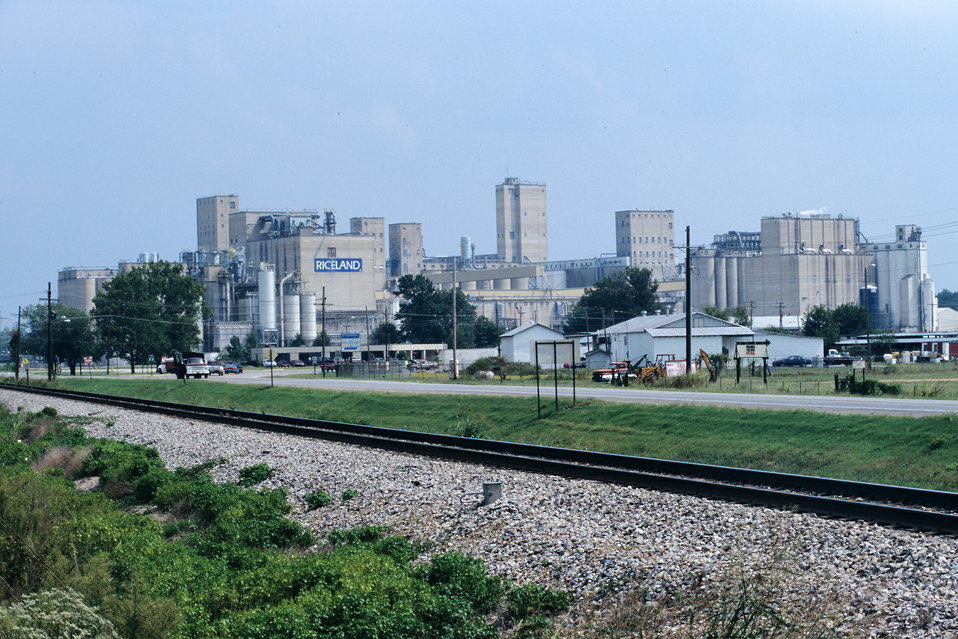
The Riceland food facility is located in Jonesboro, AR on Sept. 1, 1996. The U.S. Department of Agriculture’s (USDA) Grain Inspection, Packers and Stockyards Administration (GIPSA) offers inspection services for rice upon request on a fee basis for both domestic and export shipments. Rice inspection services are divided into two basic types: inspection for grade or factor analysis without grade. Inspection for grade involves analyzing the sample according to the quality factors listed in the Official U.S. Standards for Rice and certifying the applicable numeric grade designation, the quality factors responsible for the grade assignment, and any other quality factors the customer requests. Factor analysis involves the analysis of quality factors requested by the applicant for service without the certification of an applicable numeric grade designation. Factors requested by applicants might include free fatty acid, total oil and free fatty acid, stain as a count, broken in brown rice, false smut, and aflatoxin. Official inspections result in the issuance of an official certificate, which reports the grade of the rice. U.S. and international buyers rely on official USDA inspection certificates to provide accurate, official descriptions of the grade, class, and condition of the inspected rice. Official certificates are receivable by all offices and all courts of the United States as prima facie evidence of the truth of the statements stated thereon.